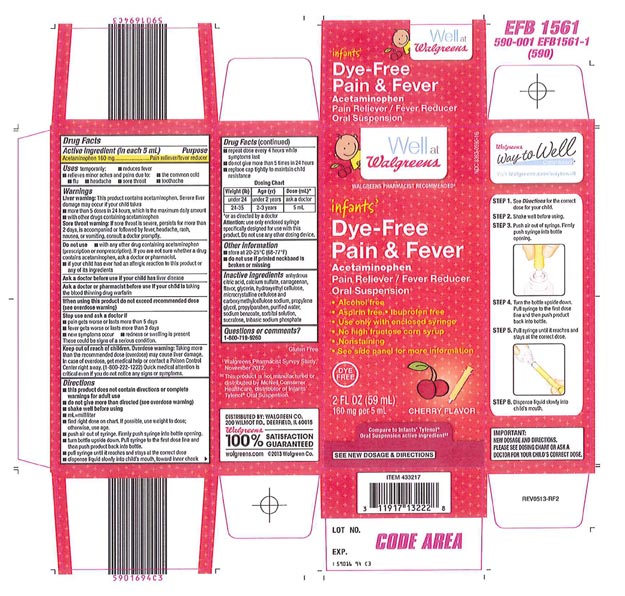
Recalled - Acetaminophen infant suspension liquid

November 1, 2013 – Product Recall – Perrigo Initiates Nationwide Voluntary Product Recall of Acetaminophen Infant Suspension Liquid, 160 Mg/5 Ml, Due to a Potential Defect with the Co-packaged Oral Syringe.